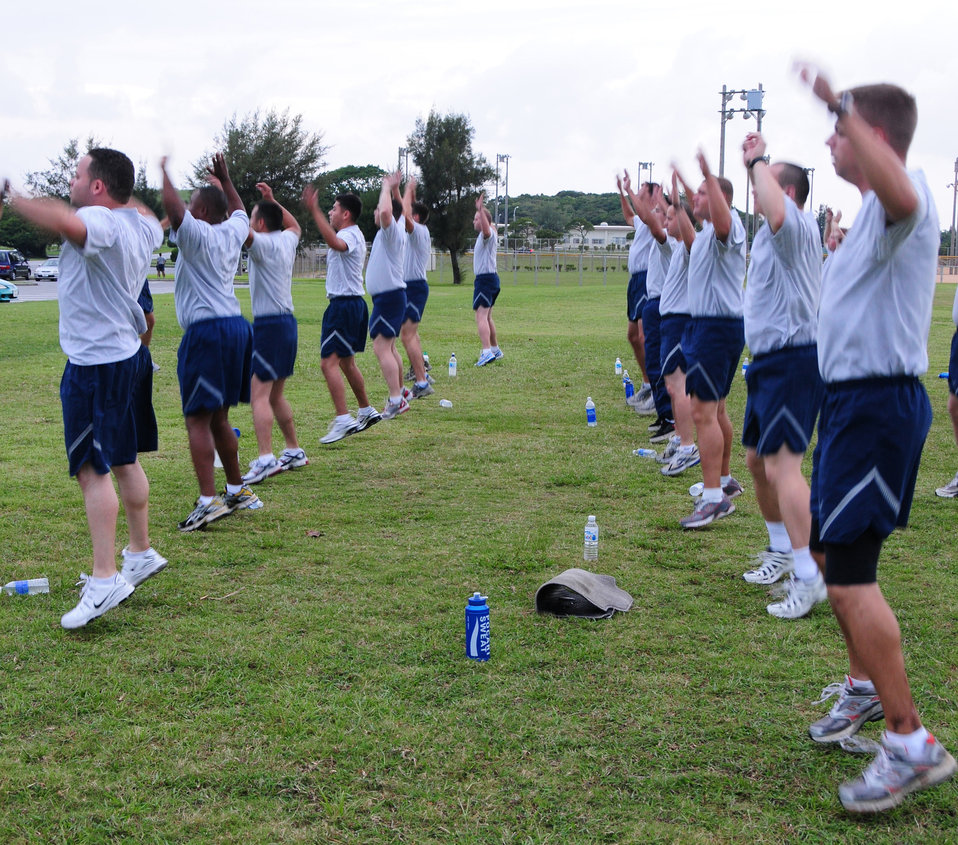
Bringing it back to basics

Members of the 18th Logistics Readiness Squadron integrate calisthenics into their weekly physical training Sept. 16, 2009, at Kadena Air Base, Japan. Along with their current PT program established around 2006, members are also encouraged to attend the healthy living class offered at the base health and wellness center.